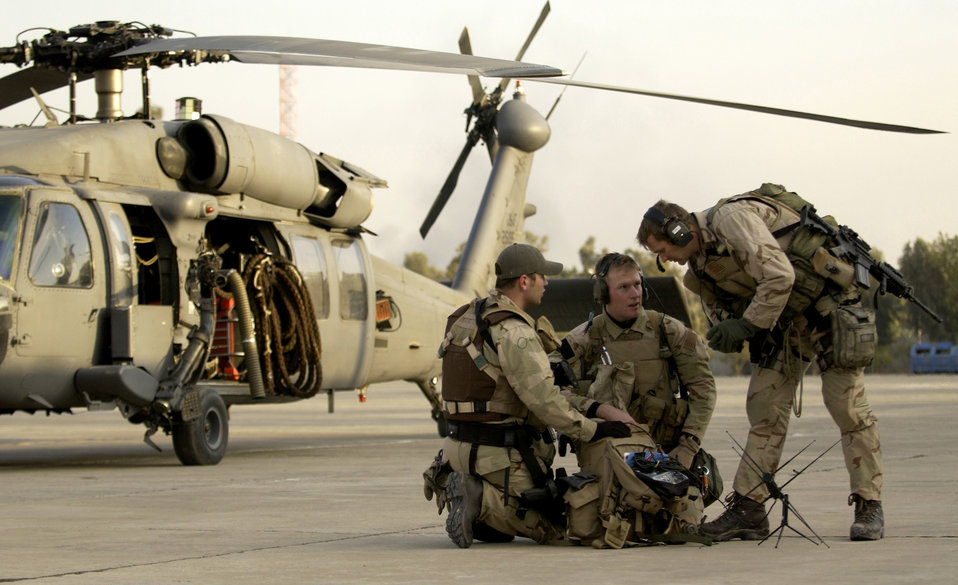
On the move

BAGHDAD, Iraq -- Air Force pararescuemen set up communications equipment during a mission in the Green Zone here Dec. 20. The Airmen are assigned to the 64th Expeditionary Rescue Squadron.